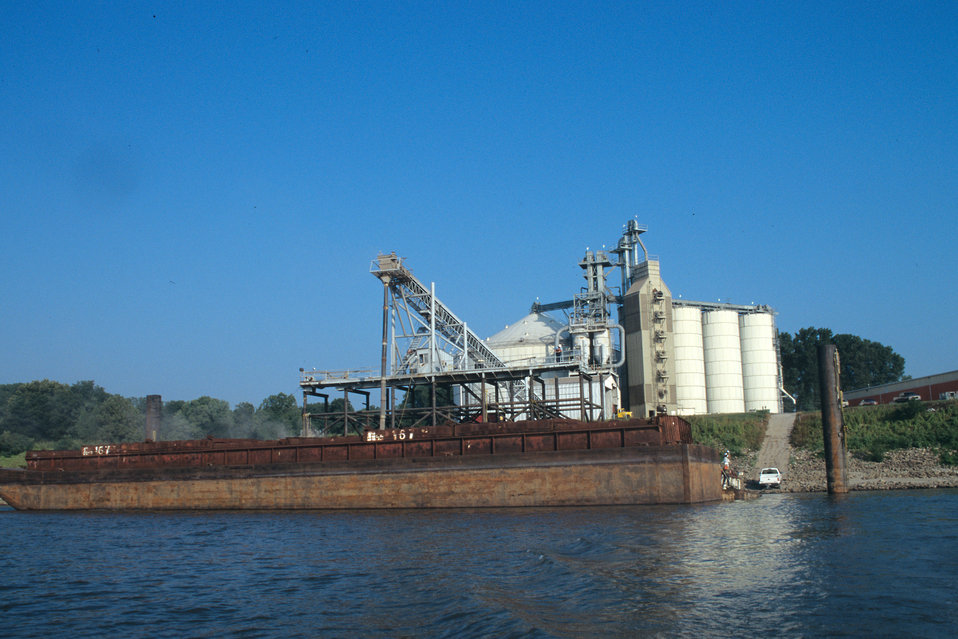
An outbound river barge is loaded with rice at the Riceland Food facility in West Memphis, AR on Sept. 1, 1996. The U.S. Department of Agriculture (USDA) Grain Inspection, Packers and Stockyards Administration (GIPSA) offers inspection services for rice upon request on a fee basis for both domestic and export shipments. Rice inspection services are divided into two basic types: inspection for grade or factor analysis without grade. Inspection for grade involves analyzing the sample according to the quality factors listed in the Official U.S. Standards for Rice and certifying the applicable numeric grade designation, the quality factors responsible for the grade assignment, and any other quality factors the customer requests. Factor analysis involves the analysis of quality factors requested by the applicant for service without the certification of an applicable numeric grade designation. Factors requested by applicants might include free fatty acid, total oil and free fatty acid, stain as a count, broken in brown rice, false smut, and aflatoxin. Official inspections result in the issuance of an official certificate, which reports the grade of the rice. U.S. and international buyers rely on official USDA inspection certificates to provide accurate, official descriptions of the grade, class, and condition of the inspected rice. Official certificates are receivable by all offices and all courts of the United States as prima facie evidence of the truth of the statements stated thereon.